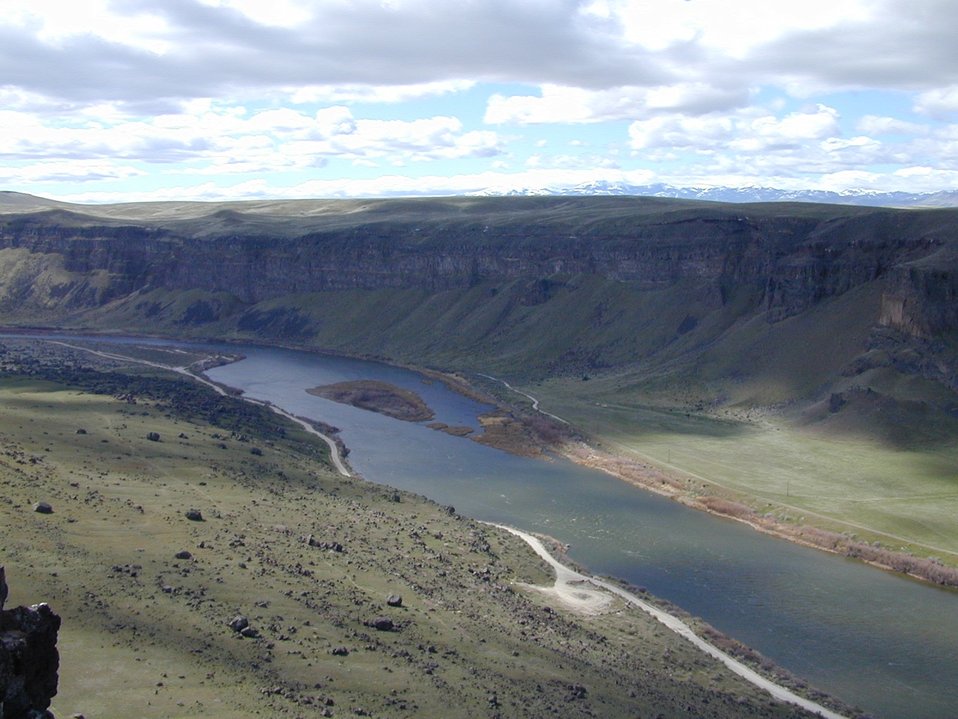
Snake River Birds of Prey National Conservation Area Lower Snake River District LSRD Snake River Canyon Scenic